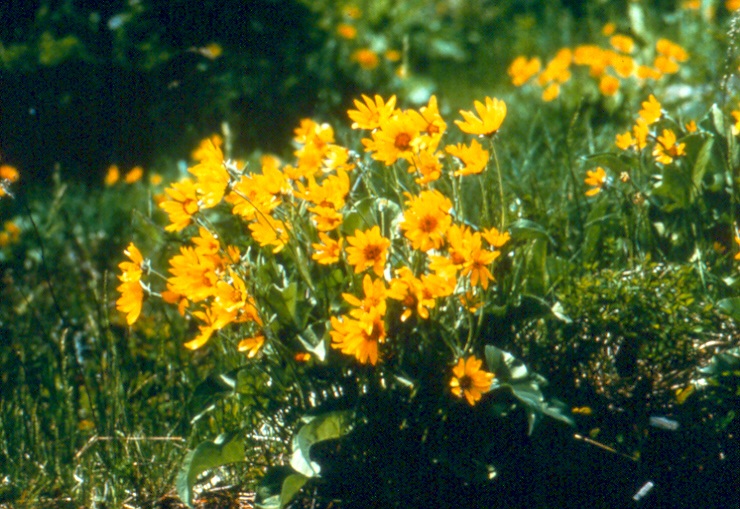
Salmon FIeld Office UCSC Upper Columbia Salmon Clearwater District